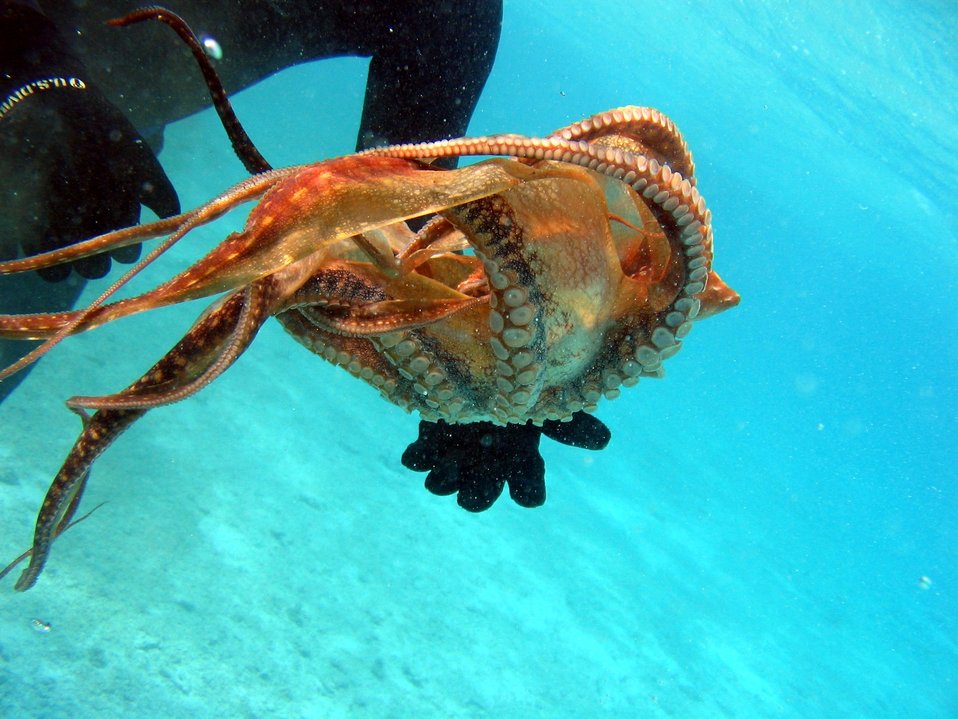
An ornate octopus (Octopus ornatus).